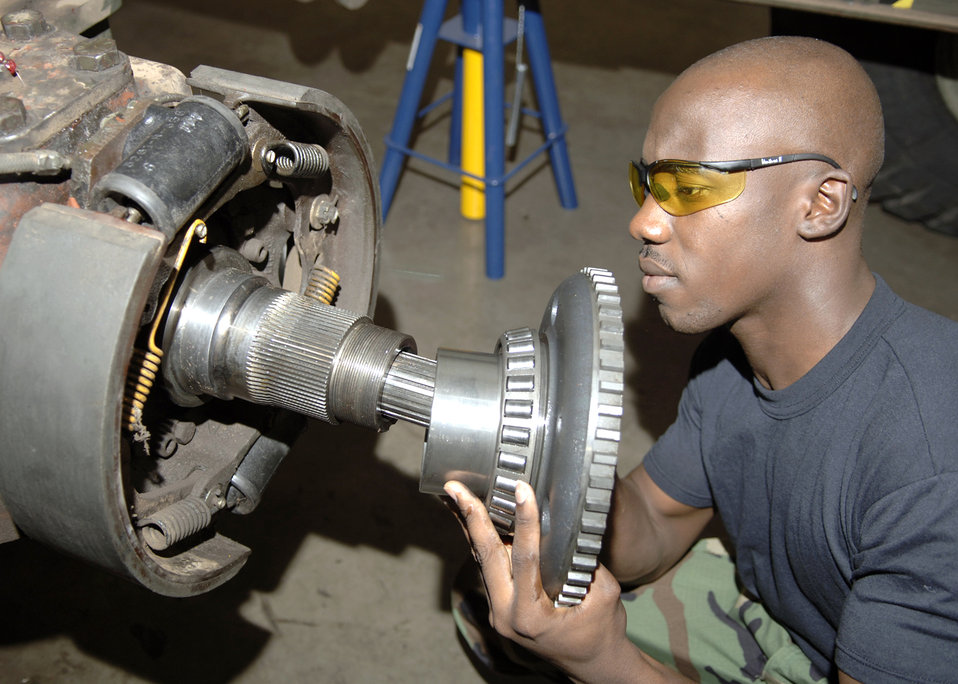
Gear assembly

Airman 1st Class Lester King assembles the gear on a crane at Davis-Monthan Air Force Base, Ariz., on July 10. Airman King was recently deployed in support of Operation Iraqi Freedom, where he participated in 251 convoys traveling more than 2.6 million miles. He is a vehicle and equipment mechanic with the 355th Logistics Readiness Squadron.